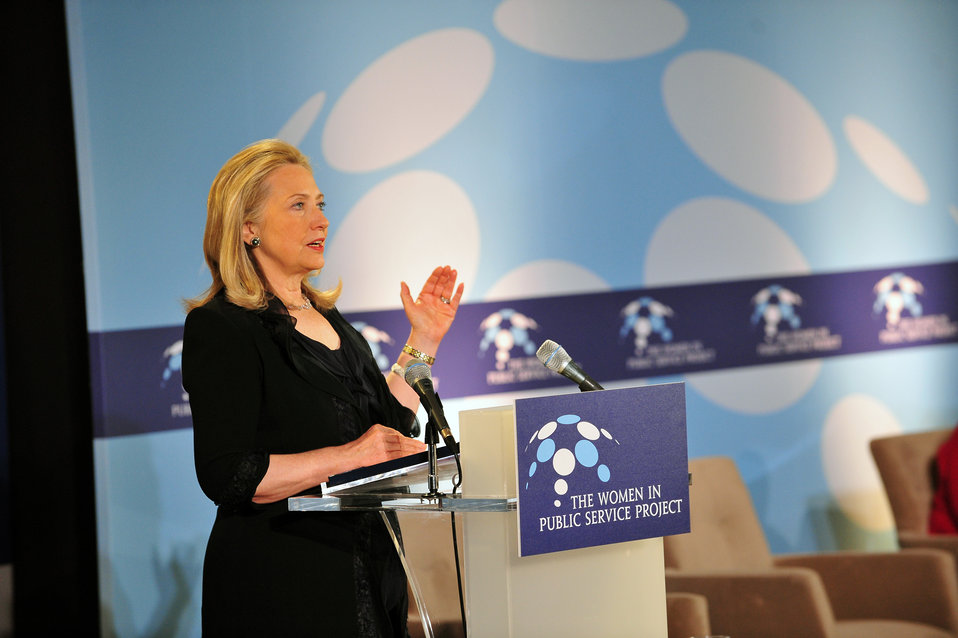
Secretary Clinton Delivers the Keynote Address at Inaugural Women in Public Service Colloquium

U.S. Secretary of State Hillary Rodham Clinton delivers the keynote address at the Inaugural Women In Public Service Colloquium, at the U.S. Department of State in Washington, D.C., on December 15, 2011.